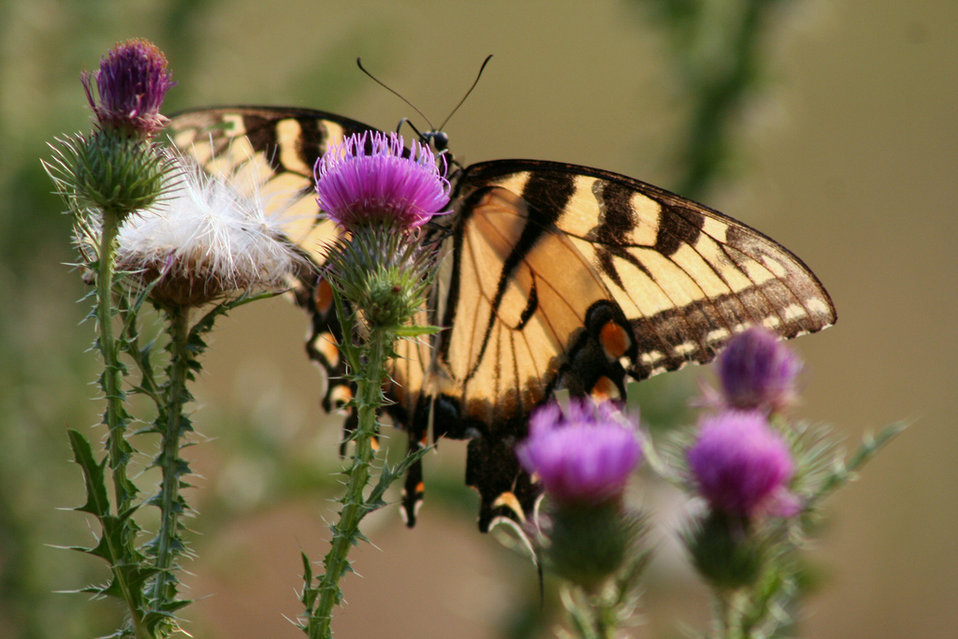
Eastern Tallgrass Prairie and Big Rivers LCC

Tiger swallowtail on a thistle.